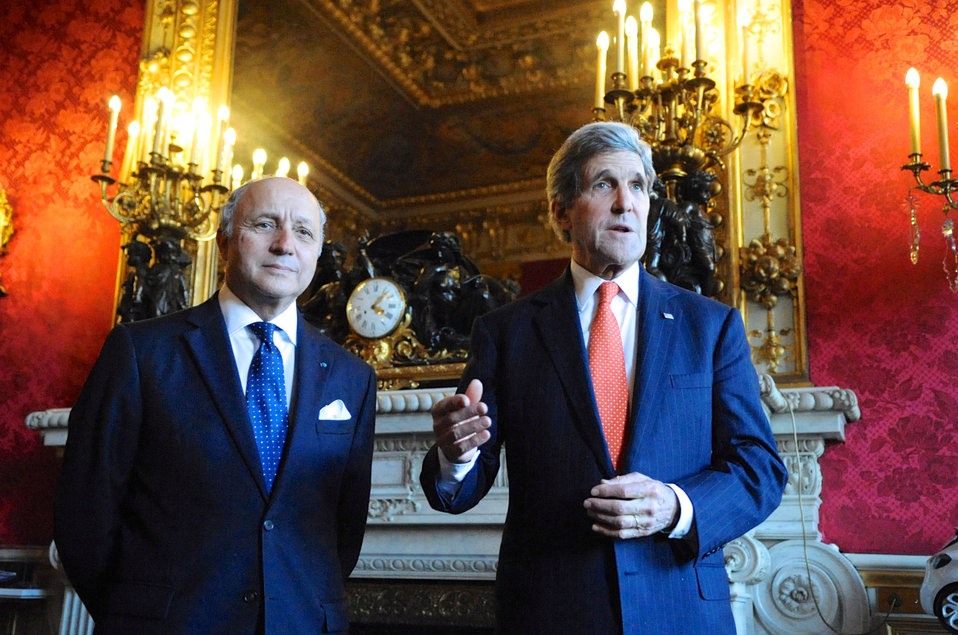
Secretary Kerry Meets With French Foreign Minister Fabius in Paris

U.S. Secretary of State John Kerry addresses reporters before a bilateral meeting with French Foreign Minister Laurent Fabius at the Quai d'Orsay in Paris, France, on January 13, 2014.